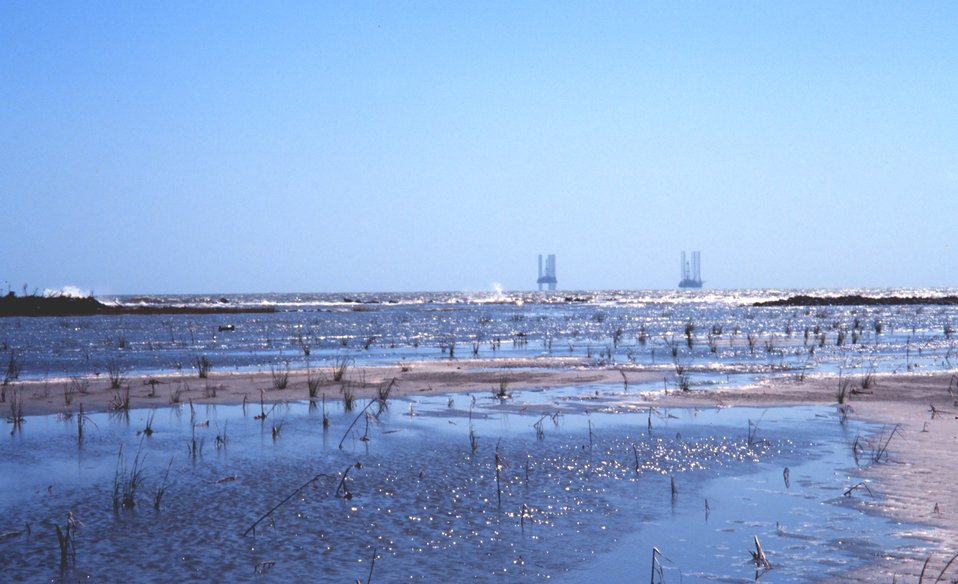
The Greenhill/East Timbalier newly created marsh with just planted Spartina alterniflora. Jackup oil rigs in the open Gulf of Mexico in the distance.